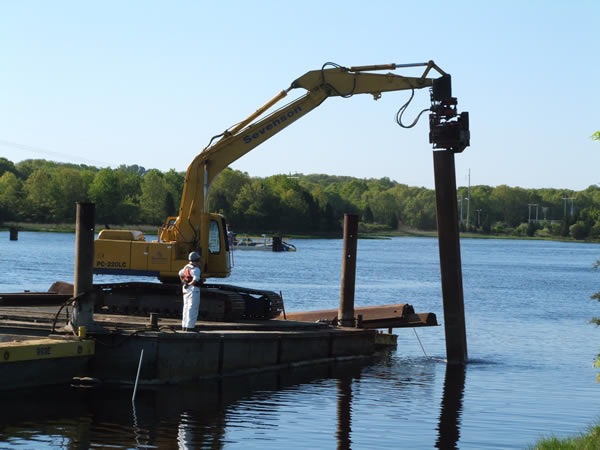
May 2009, Sturdy sheet piles are installed to guide dredge equipment

Heavy duty cables run from these sheet piles to help guide the dredge crews and keep the equipment on track.

Each track or path for the dredge is determined by sediment sampling analysis, prioritization of areas for cleanup depending upon levels of contamination and tides and then recorded and analyzed for path accuracy by GPS.

Significant sediment sampling work is done prior to each cleanup season to determine where the dredge should go. Annual sampling work helps to monitor the progress and determine the target areas for the upcoming cleanup season.